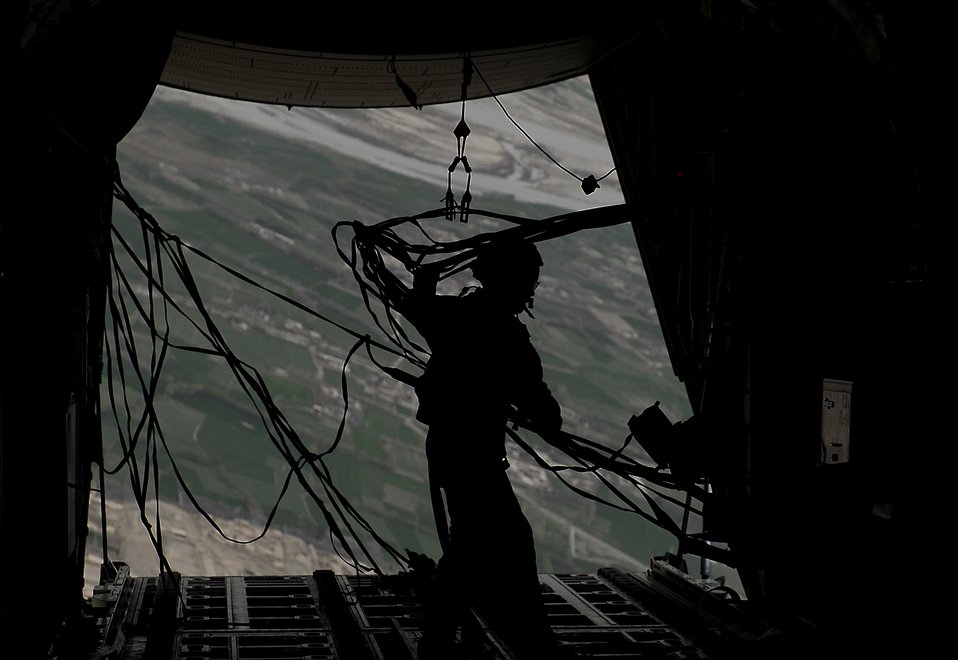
C-130J delivers supplies over Afghanistan

Senior Master Sgt. Thomas Kelly retrieves straps after an airdrop over Afghanistan March 2, 2010. Sergeant Kelly is deployed from the Rhode Island National Guard's 135th Airlift Squadron, and is from Baltimore, Md.